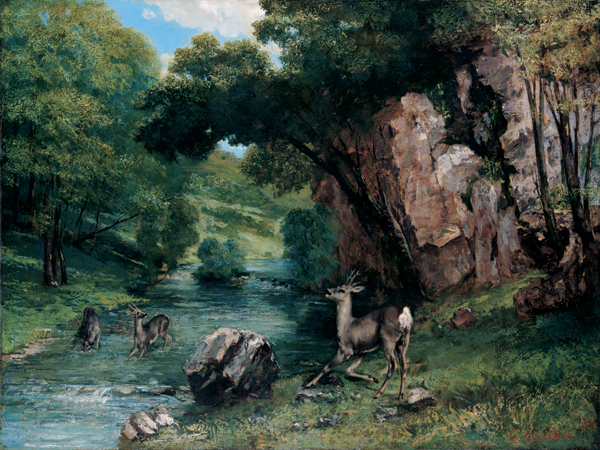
'Roe Deer at a Stream', oil on canvas painting by Gustave Courbet